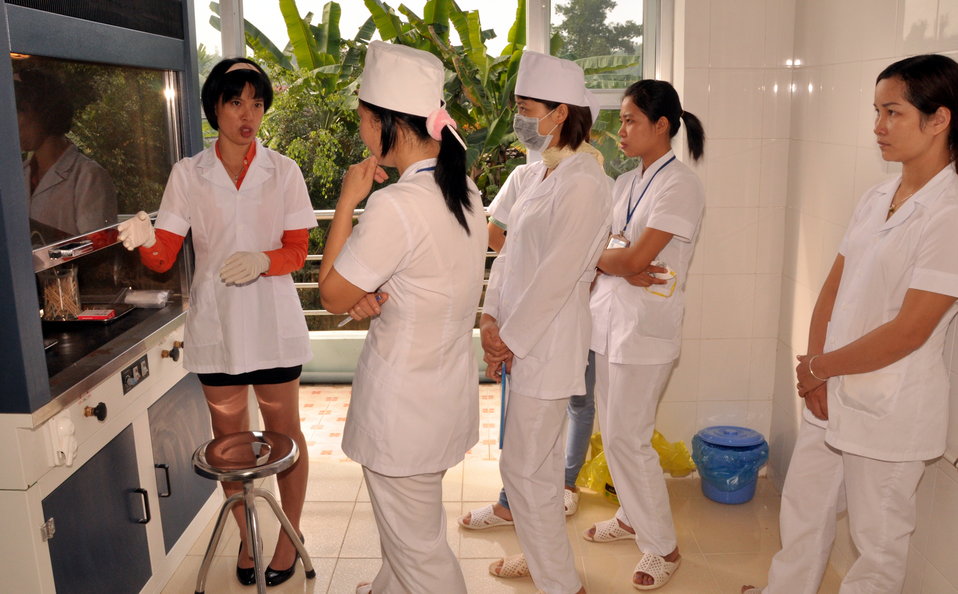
USAID supports new rapid detection TB equipment